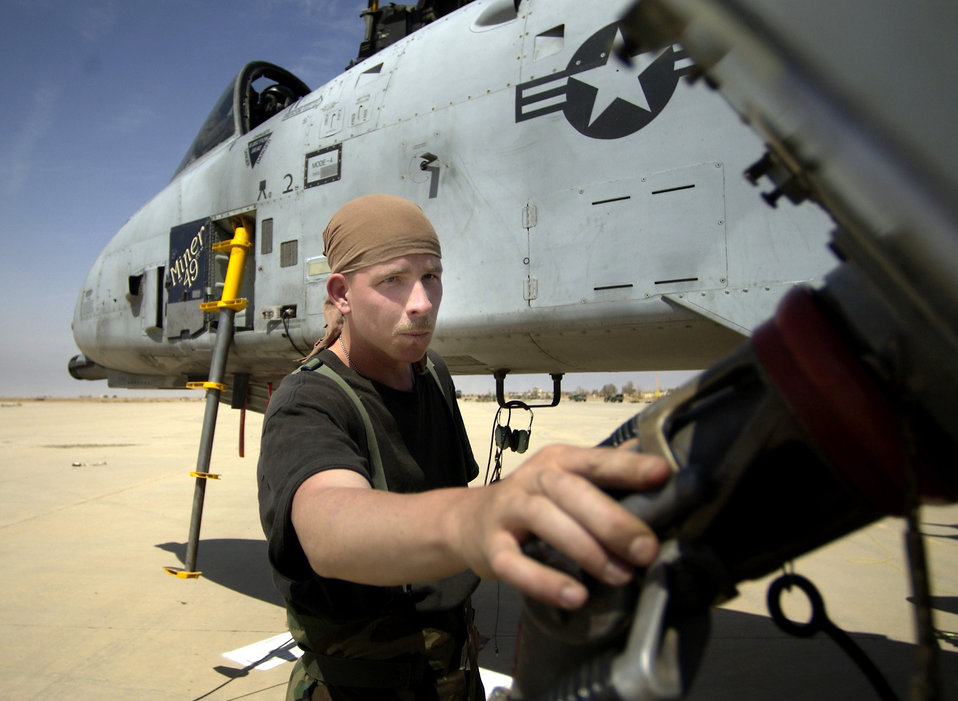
Thunderbolt refueled

OPERATION IRAQI FREEDOM -- Staff Sgt. Jason M. Smith, a fuels troop with the 392nd Air Expeditionary Wing, refuels an A-10 Thunderbolt II April 3 at a forward deployed location in southern Iraq.